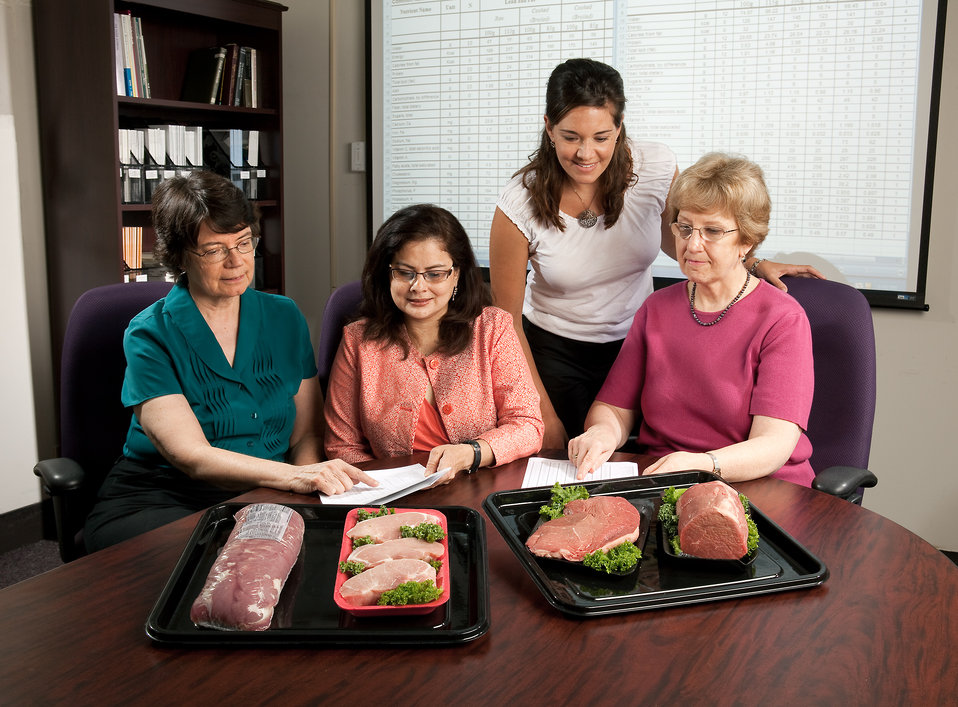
U.S. Department of Agriculture (USDA) Agriculture Research Service (ARS) Nutrient Data Laboratory scientists review the revised USDA nutrient data sets for fresh pork and beef on Aug. 30, 2011. (L to R chemist Kristine Patterson, nutritionists Juhi Williams and Marybeth Duvall, and supervisory nutritionist Joanne Holden).